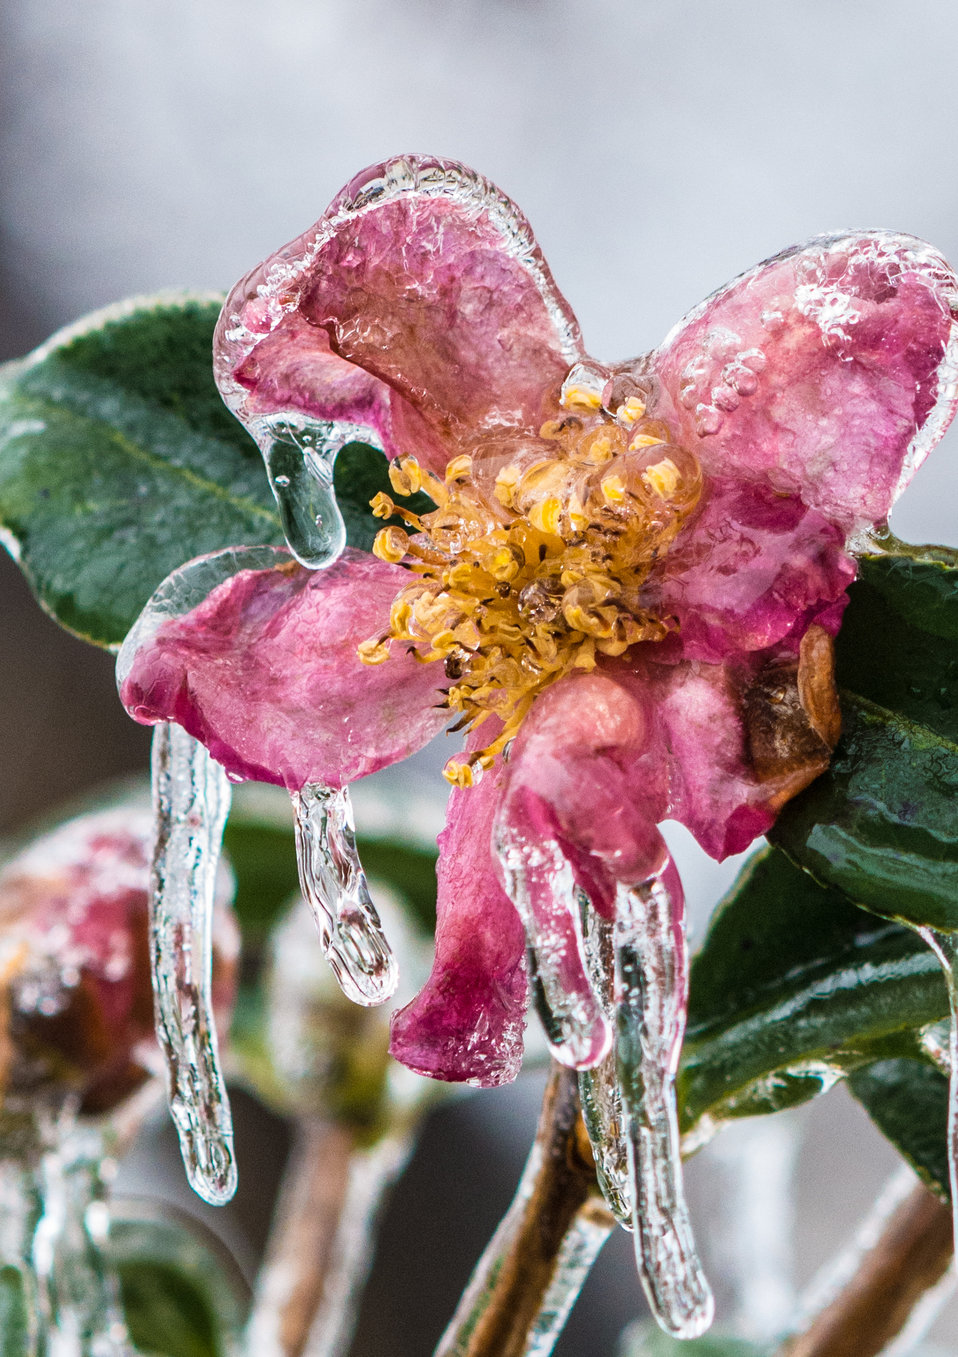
Freezing rain covers flowers, plants and trees in Falls Church, VA on Monday, Dec. 9, 2013.